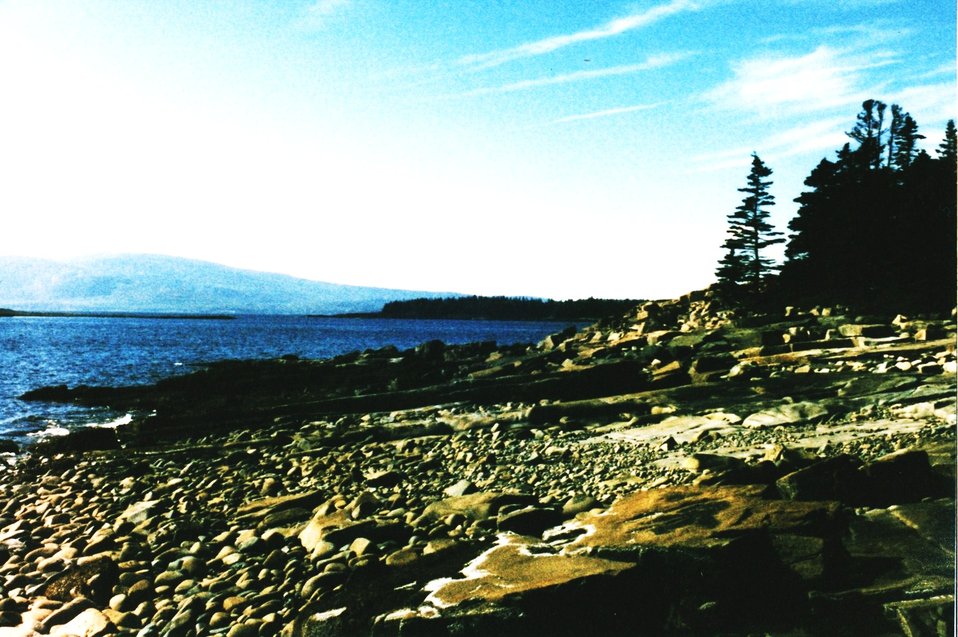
Grindstone Point on Schoodic Head. Cobble beach lying between tabular outcroppings of exfoliated granite.